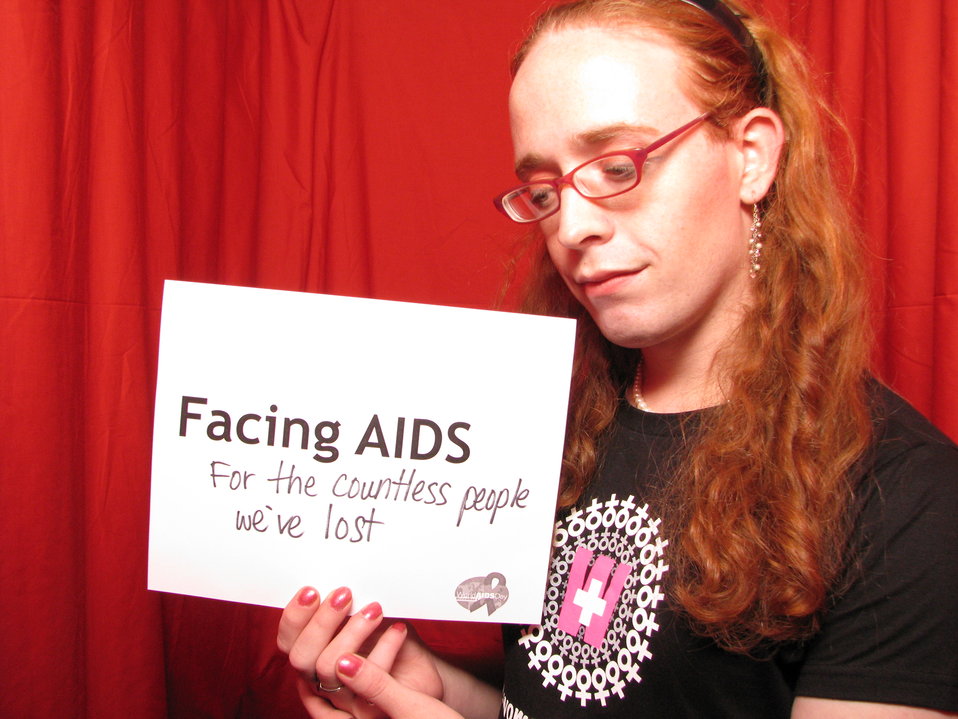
FACING AIDS for the countless people we've lost.

From the AIDS.gov photo booth at the U.S. Conference on AIDS, September 2010 (Orlando, FL).